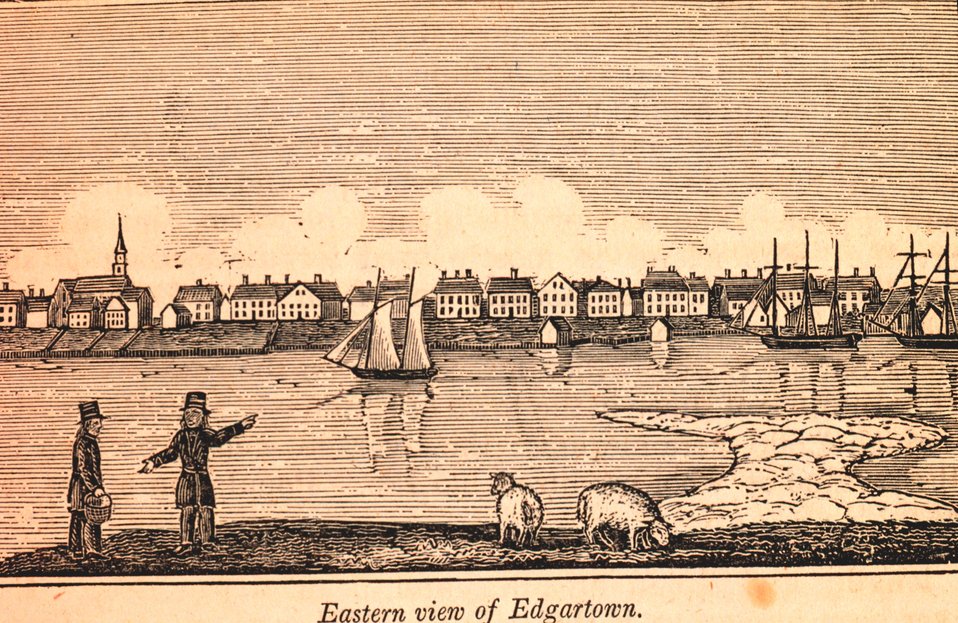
Edgartown Harbor as seen from Chappequiddick Island. In: Historical Collections ... of Every Town in Massachusetts. 1841.